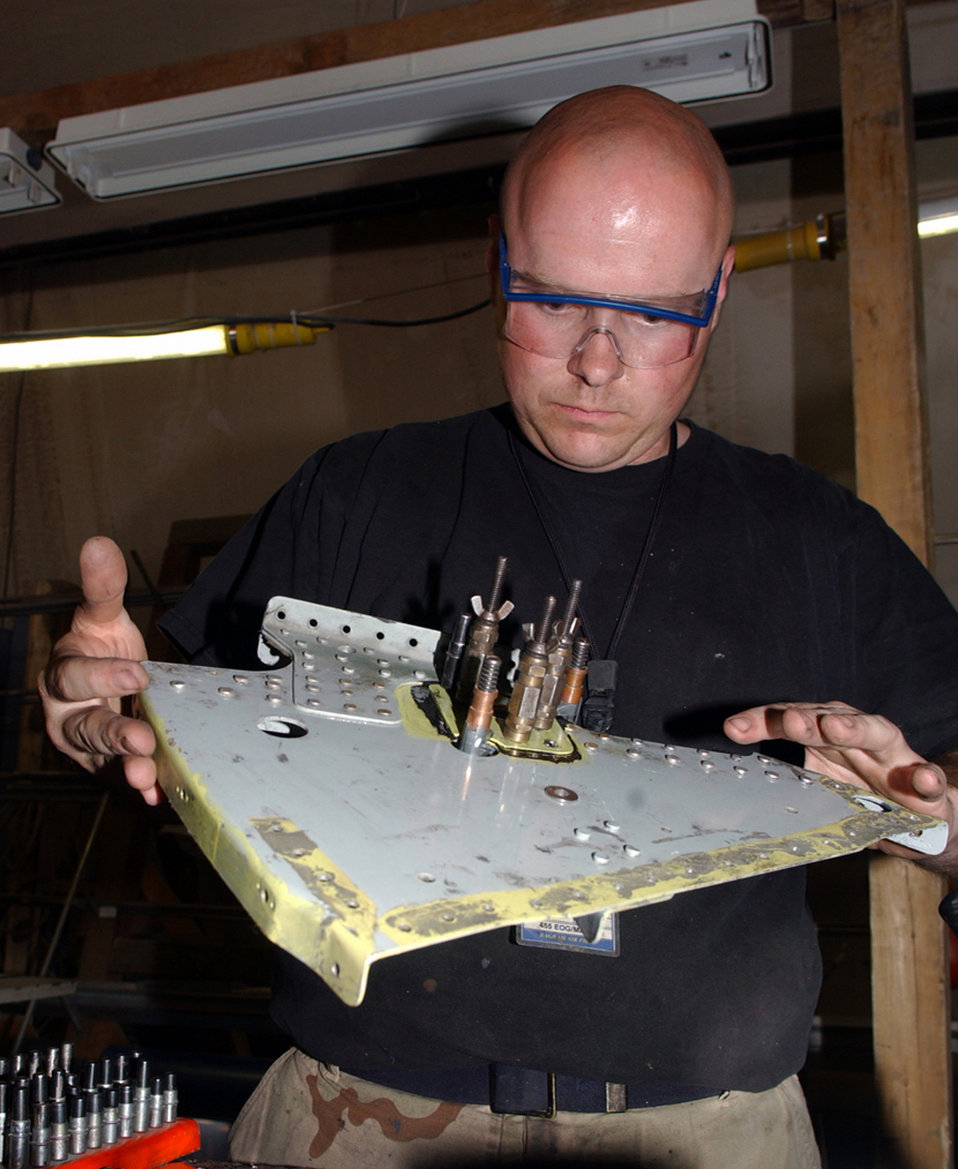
If you break it, they will come

BAGRAM AIR BASE, Afghanistan -- Staff Sgt. Zabud Carper checks a repair to an A-10 Thunderbolt II slat rib. The rib had a hairline crack that was discovered during an aircraft inspection. Sergeant Carper is assigned to the 455th Expeditionary Aircraft Maintenance Squadron's fabrication branch here.